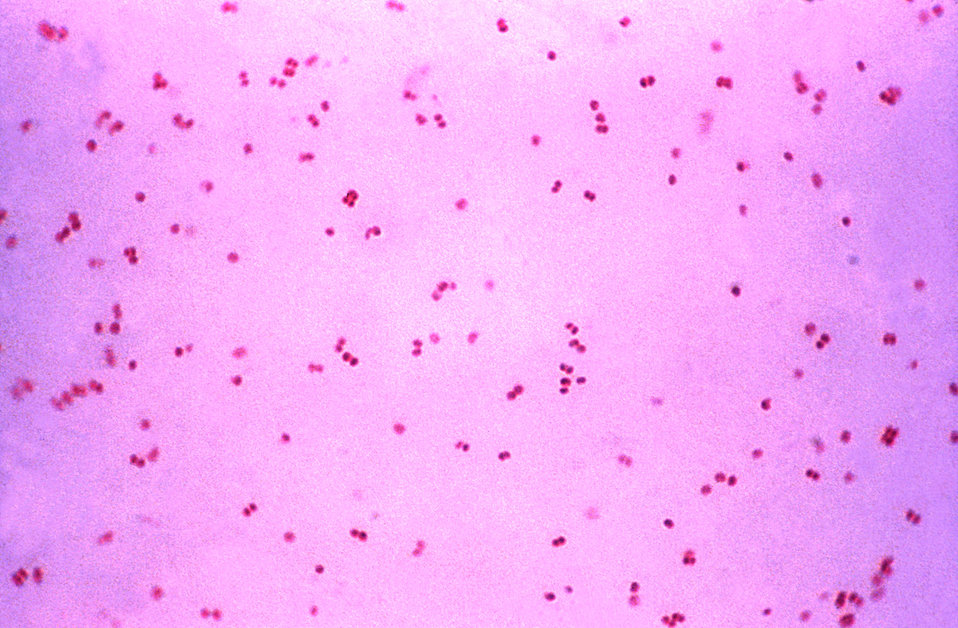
This photomicrograph depicts the gram negative bacteria Neisseria gonorrhoeae.